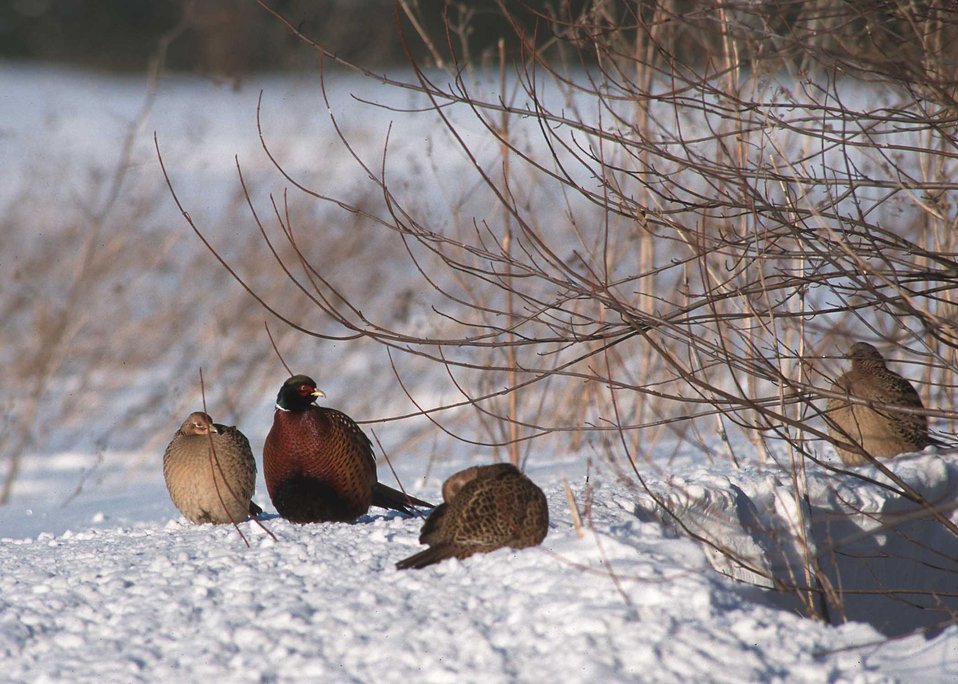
Pheasants and other wildlife species need both food and cover in harsh Iowa winters. It is provided by landowners with both annual and perennial plantings.